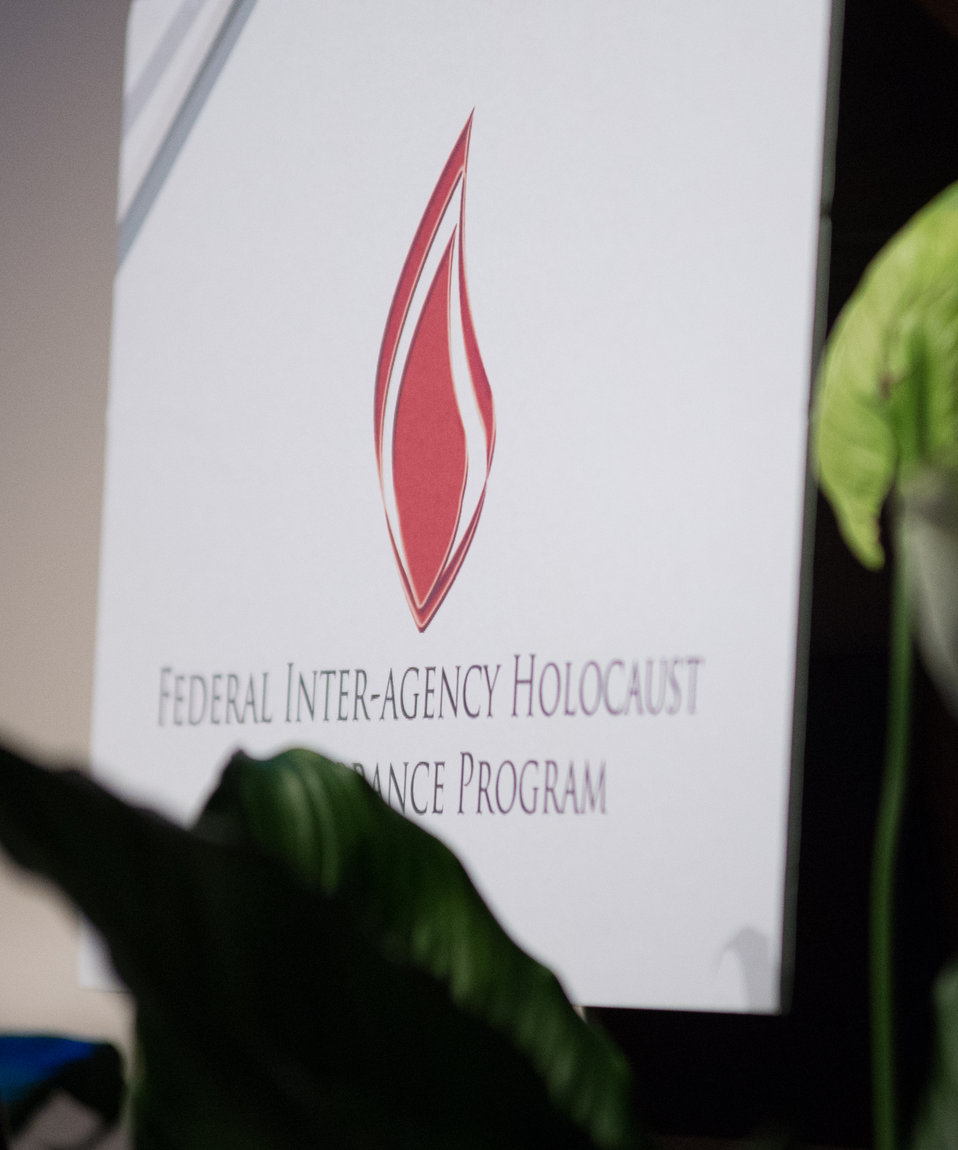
The program for the 2013 Federal Inter-Agency Holocaust Remembrance Day, at the Lincoln Theatre, on Wednesday, April 17, 2013, in Washington, D.C. Since the 1979 President’s Commission on the Holocaust, an annual proclamation signed by the President of the United States recognizes the importance of remembering the atrocities of the Holocaust that should never be forgotten or be ignored.